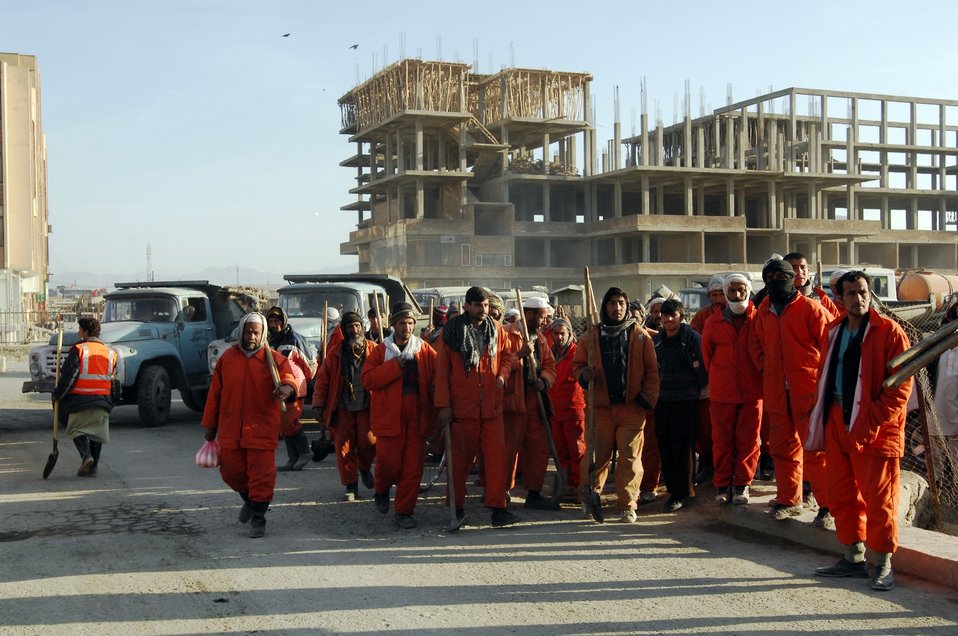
Care57